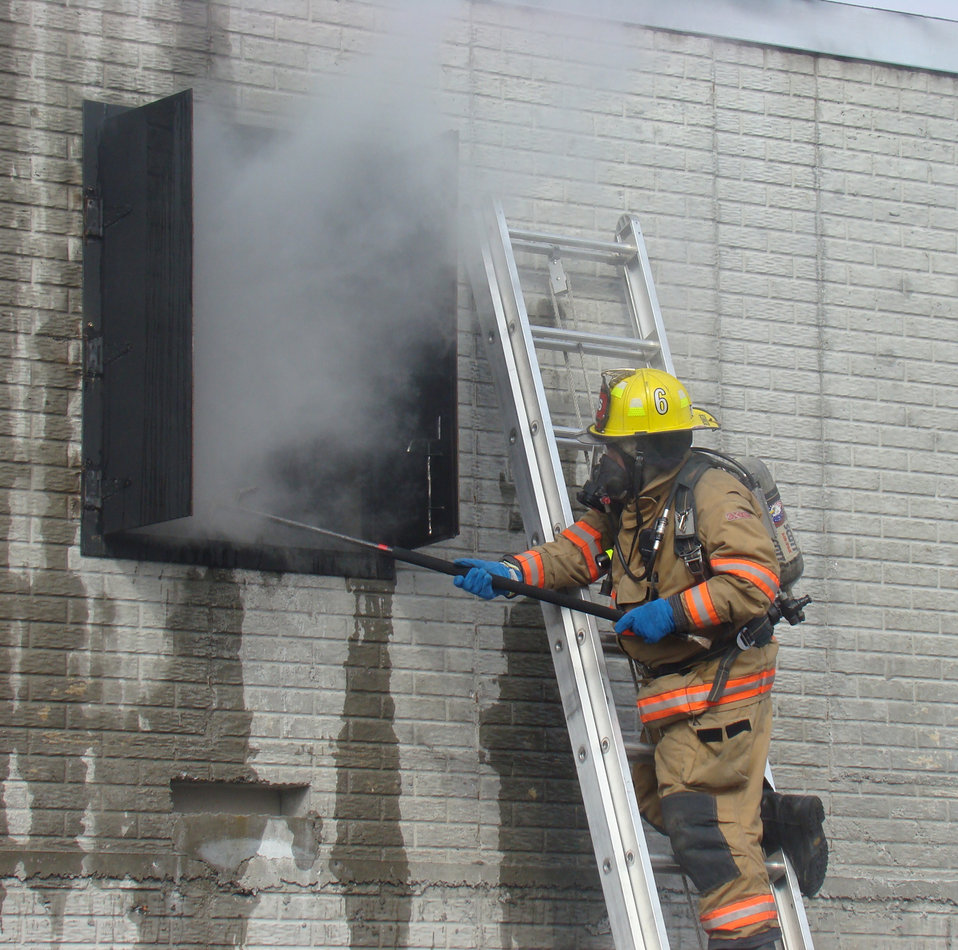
Live Experiments Examine Impact of Changes in Firefighting Resources

During a fire safety experiment, a firefighter ventilates the building to let smoke and heat out to improve conditions inside.